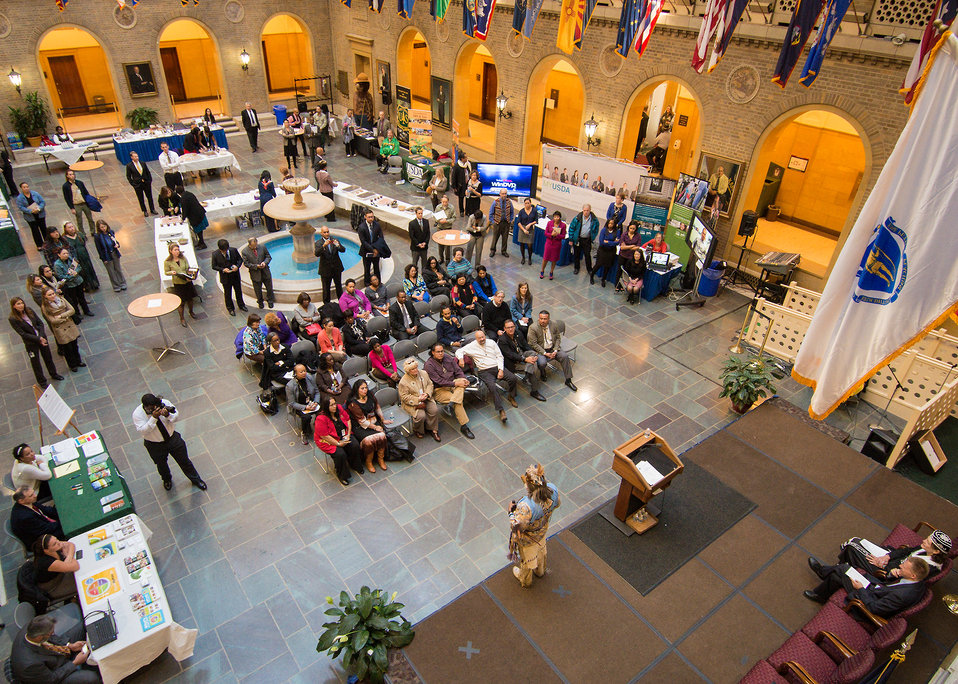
Cheroenhaka Nottoway Indian Tribe Chief Walter D. “Red Hawk” Brown III presents a history of the First American Tribes of Virginia at the 2013 American Indian and Alaska Native Heritage Observance at the U.S. Department of Agriculture (USDA), on Thursday, Nov. 14, 2013 in Washington, D.C. The theme of this year’s event was “Guiding Our Destiny with Heritage and Traditions.”